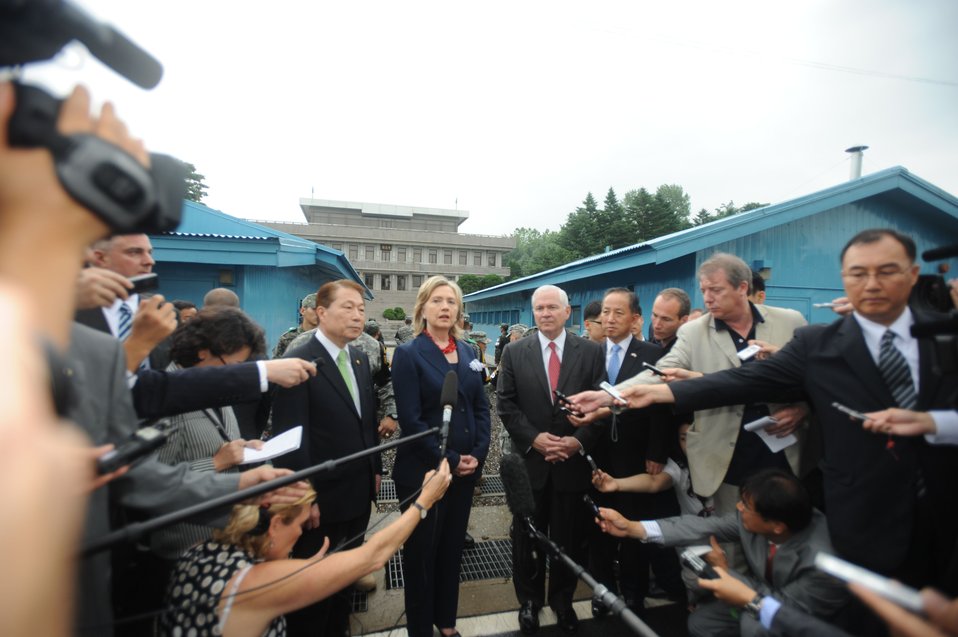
Secretary Clinton and Secretary Gates Brief Reporters

U.S. Secretary of State Hillary Rodham Clinton and U.S. Secretary of Defense Robert M. Gates brief reporters at the Truce Village in Panmunjom, South Korea, on July 21, 2010.